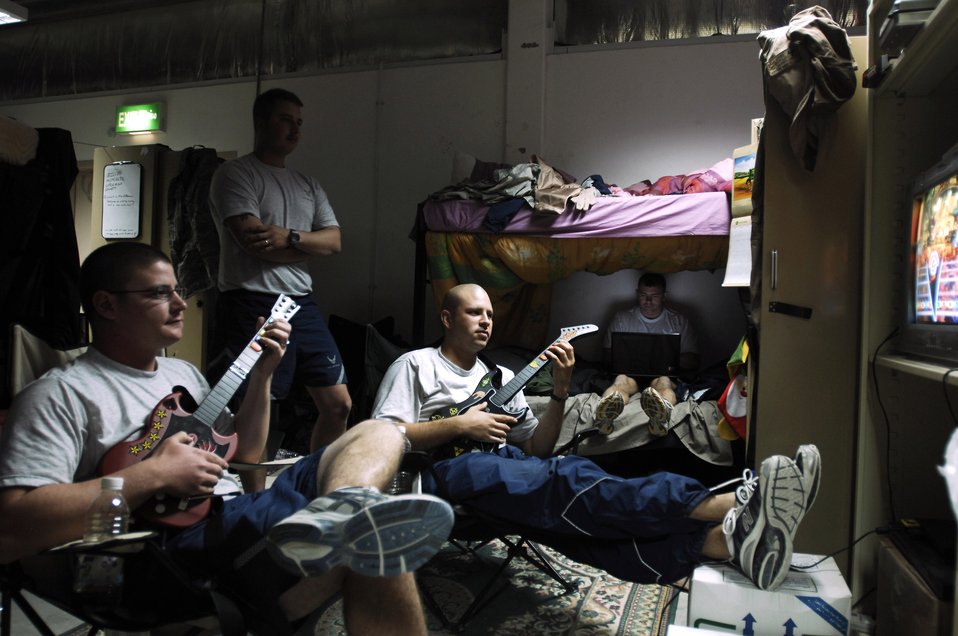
Combat truckers haul cargo through dangerous roads

Airmen from the 586th Expeditionary Logistics Readiness Squadron, 70th Medium Truck Detachment enjoy their off time in their barracks prior to departing on a recent convoy from an Army camp in Southwest Asia. The Airmen of the 70th and 424th MTDs assigned to the 586th ELRS are in-lieu-of forces supporting the Army support line-haul convoy movements in and out of Iraq.